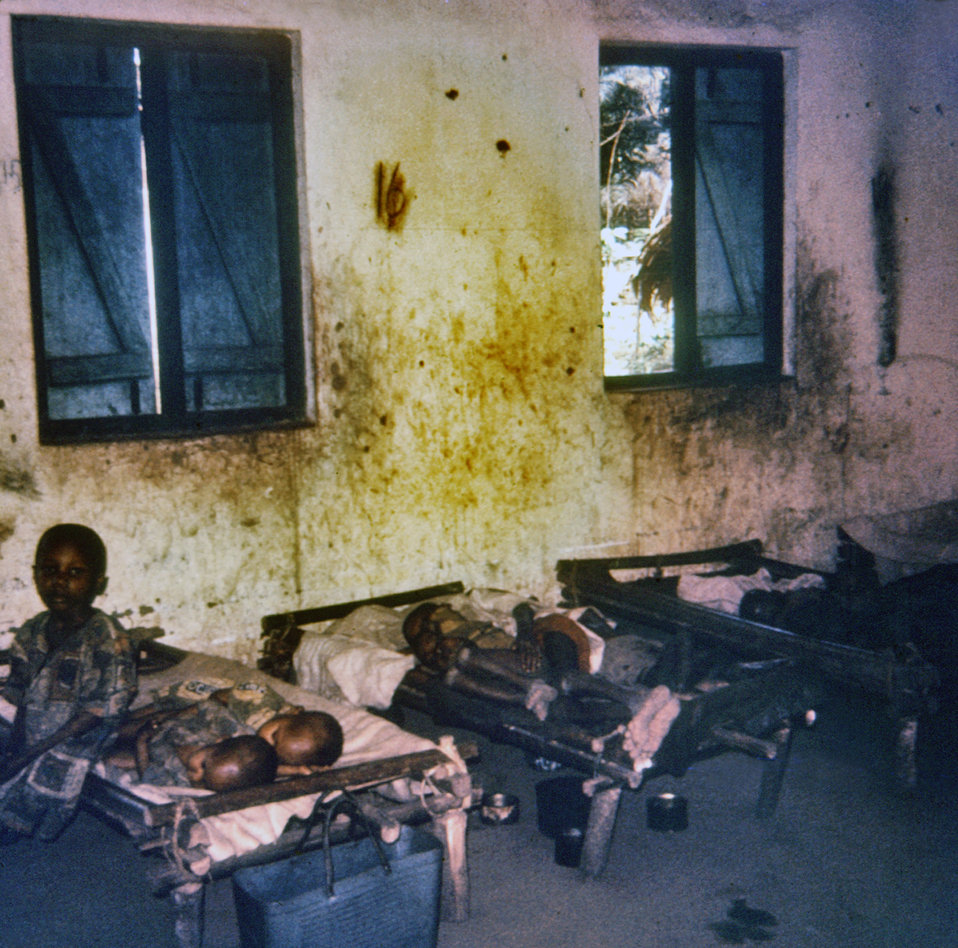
This photograph depicted children inside one of the hospitals, which housed the sickest patients during the refugee relief effort of the late 1960s.